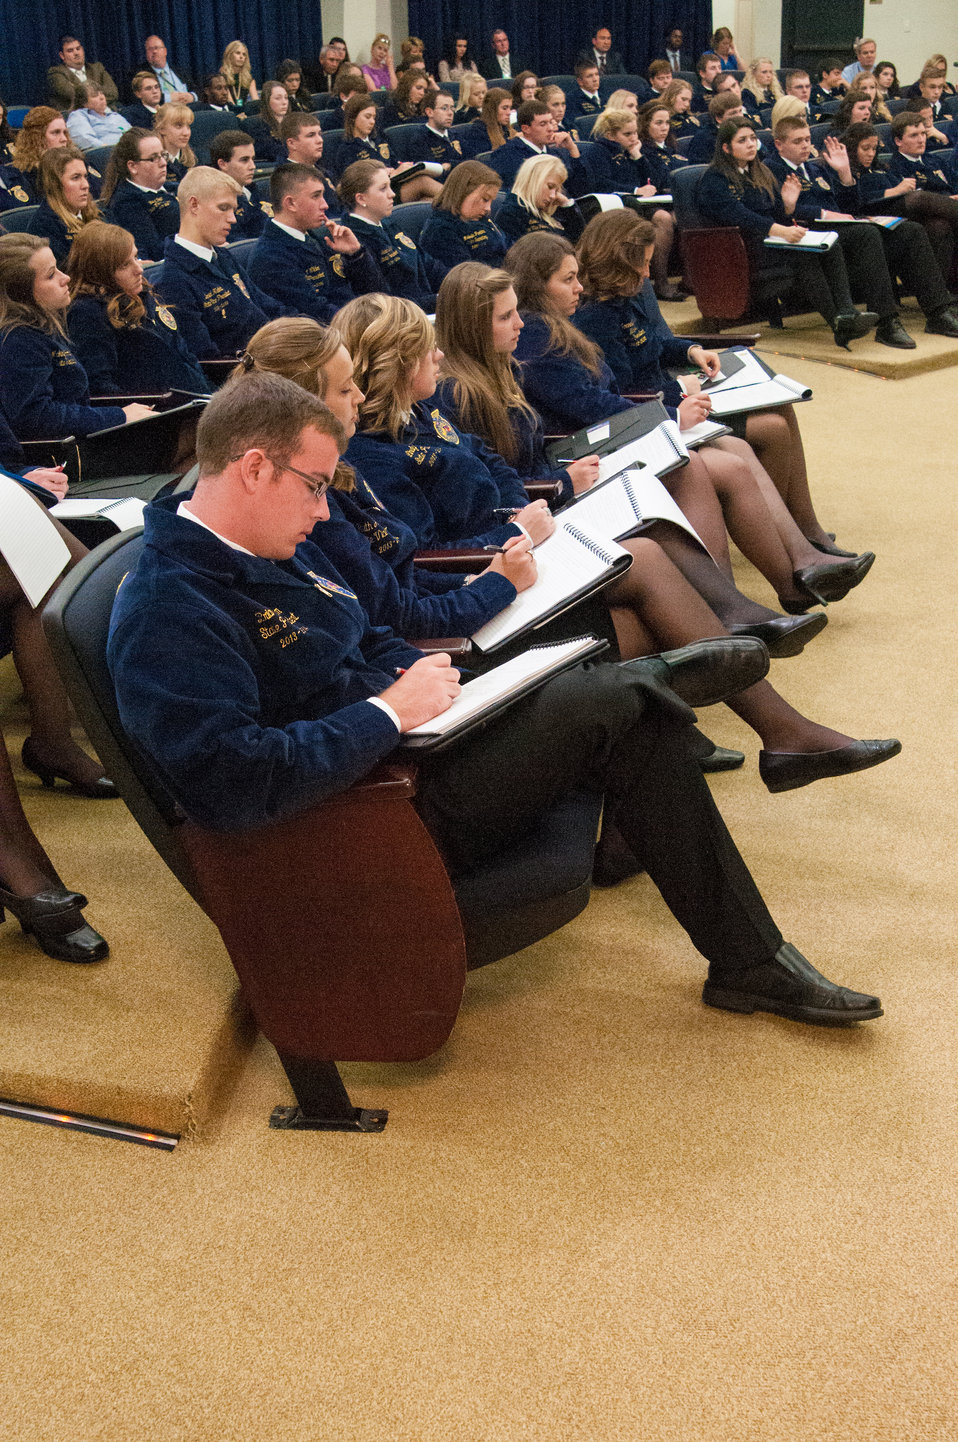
FFA State President Brian Chism (KY) takes notes during Agriculture Secretary Tom Vilsack’s discussion on domestic and foreign agriculture at a meeting of the White House Rural Council on Wednesday, Jul. 24, 2013 in Washington, D.C.